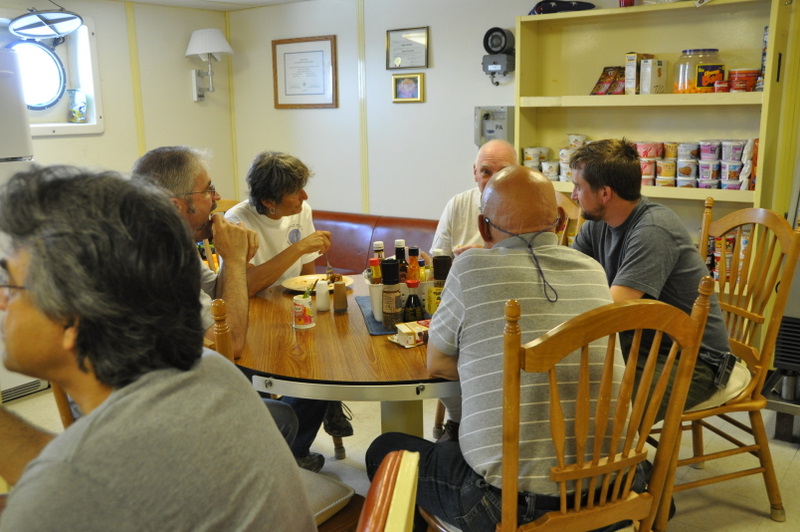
August 2009, Stocking up on important fuel in the mess